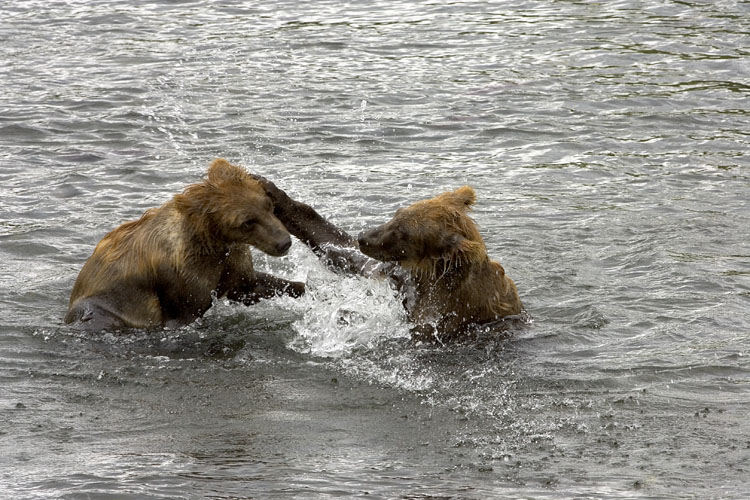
KOD Hildebrand (25)

Kodiak National Wildlife Refuge- Wildlife